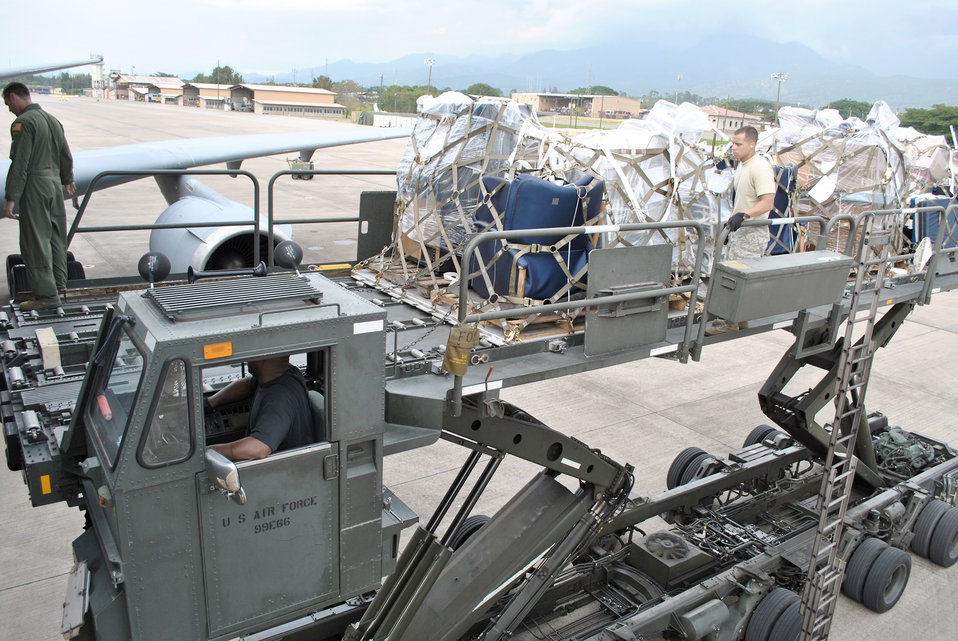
Soto Cano humanitarian

Airmen from the 2nd Air Refueling Squadron out of Joint Base McGuire-Dix-Lakehurst, N.J., the 612th Air Base Squadron Air Terminal Operations Center work together to unload eight pallets of humanitarian supplies Oct. 25, 2010, at Soto Cano Air Base, Honduras. The supplies were brought to Soto Cano Air Base, Honduras, through the Denton Program, which allows the Department of Defense to use extra space on U.S. military cargo aircraft to transport humanitarian assistance materials.